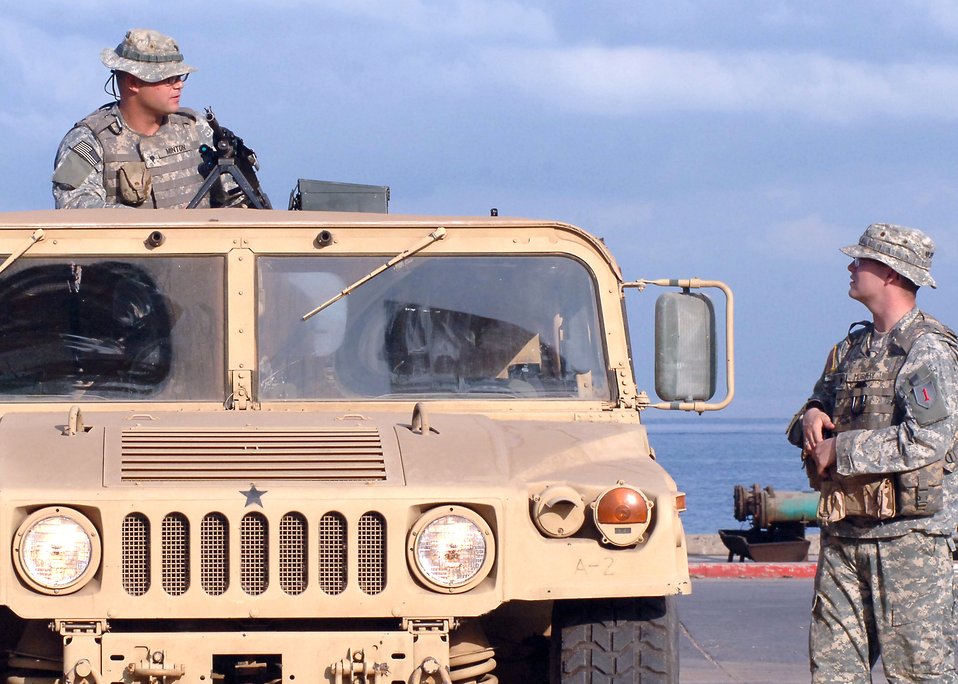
Airmen work to provide security for incoming vessels

Army Specs. Nicholas Minton (left) and James Murphy provide security at the port in Djibouti City, Djibouti, Oct. 15 as part of a joint procedure to secure a pier for an incoming naval ship. The soldiers are assigned to the 1st Battalion, 16th Infantry, Alpha Co.